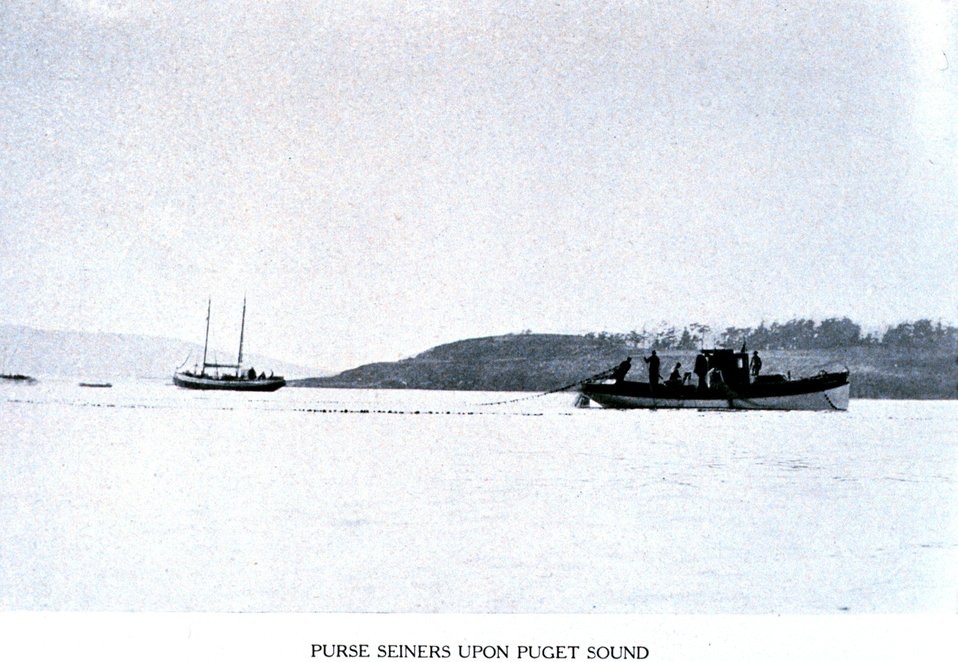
'Purse Seiners upon Puget Sound'. In: 'Puget Sound and Western Washington Cities-Towns Scenery', by Robert A. Reid, Robert A. Reid Publisher, Seattle, 1912. P. 22.